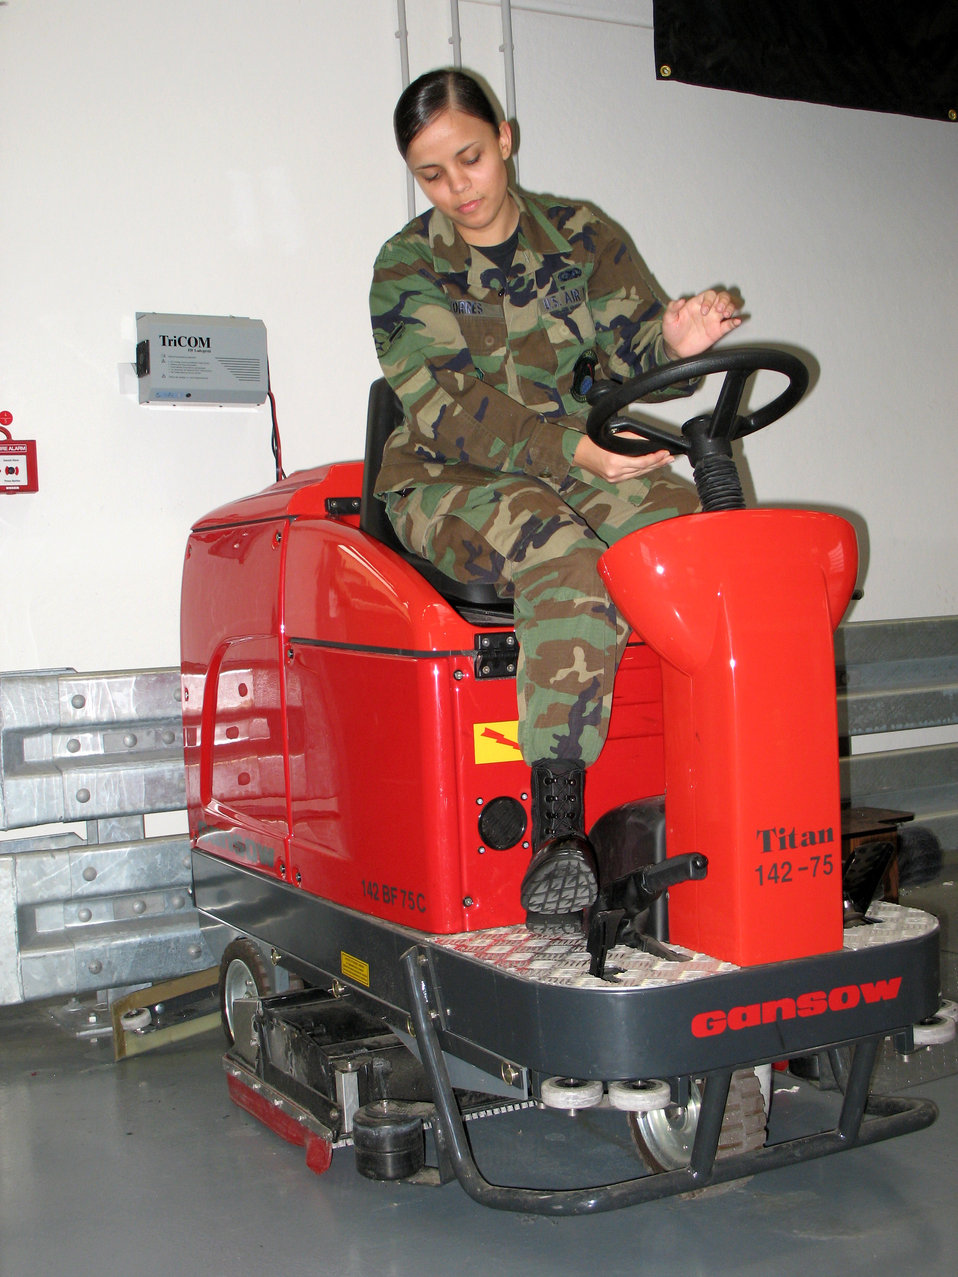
Serving through the season: Amn. Marilyn Torres

Airman Marilyn Torres starts a floor-cleaning Zamboni at Spangdahlem Air Base, Germany, Dec. 8. One of her duties as a supply apprentice is to ensure the 726th Air Mobility Squadron's Supply Warehouse floor presents a professional military image.